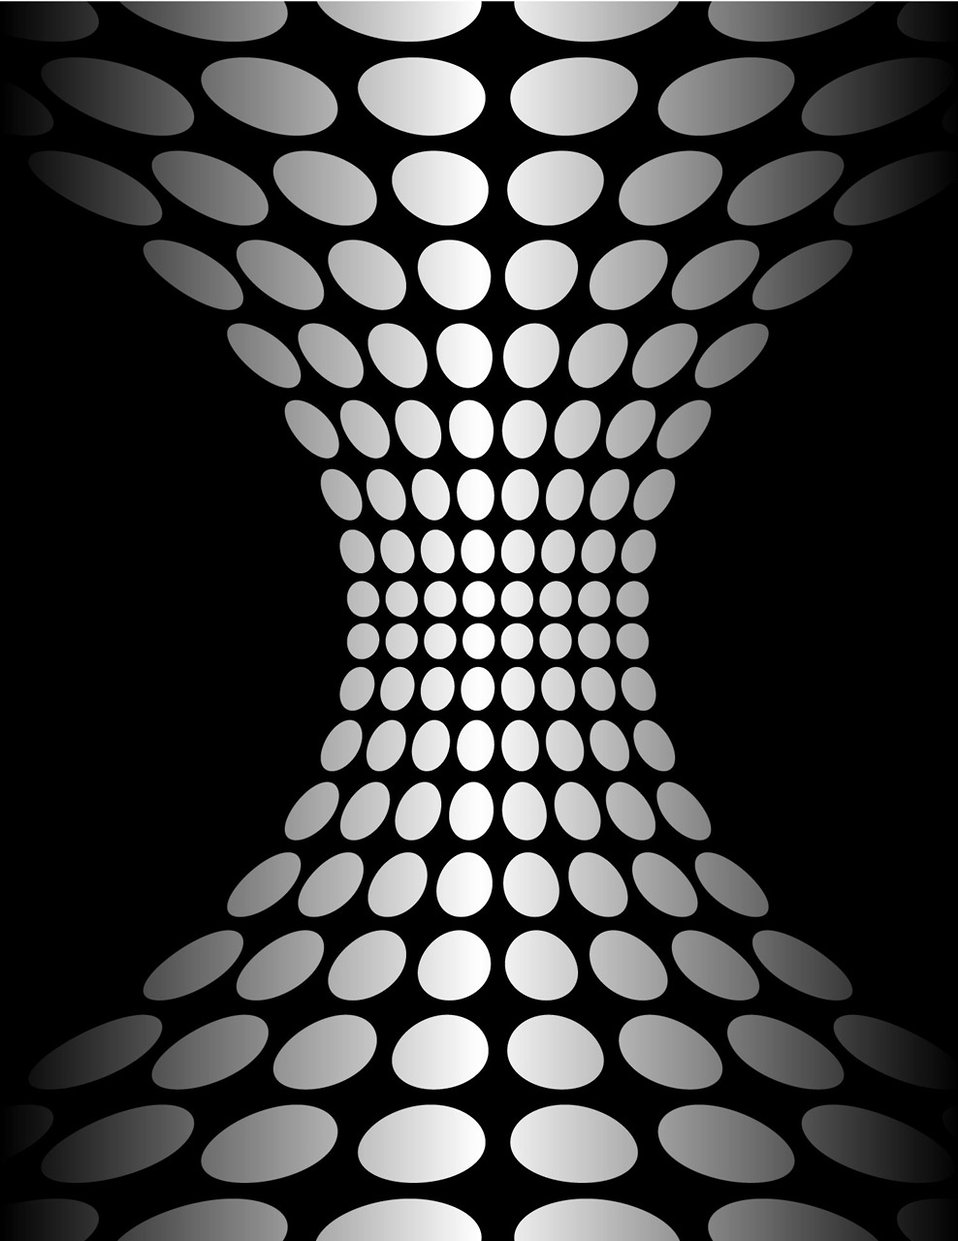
Dotted abstract background

Abstract background.